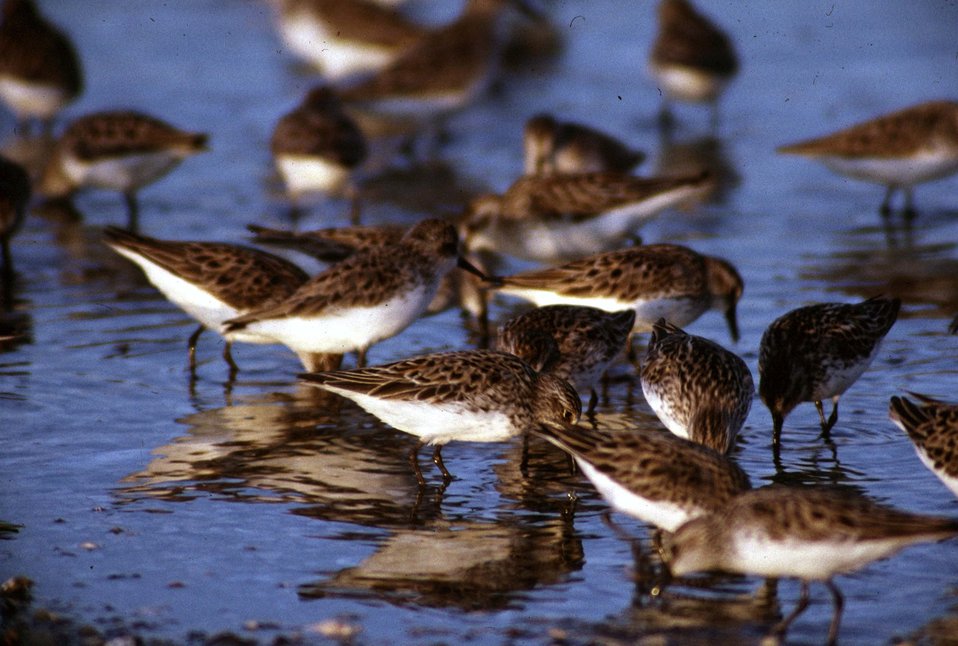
Sanderlings